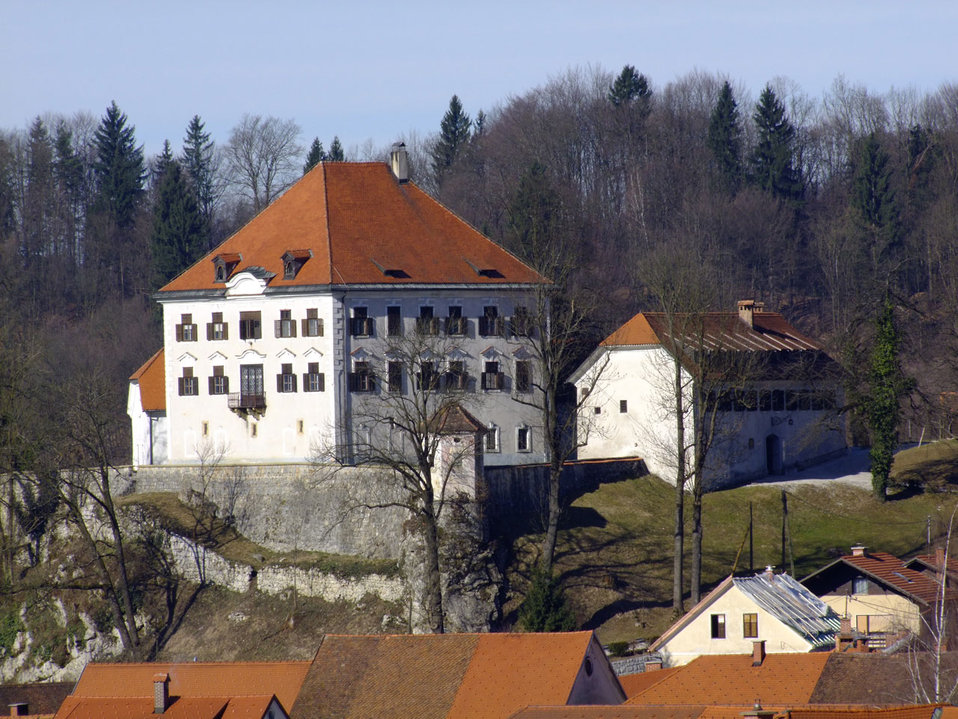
Castle zaprice

Medieval castle - today museum near kamnik.